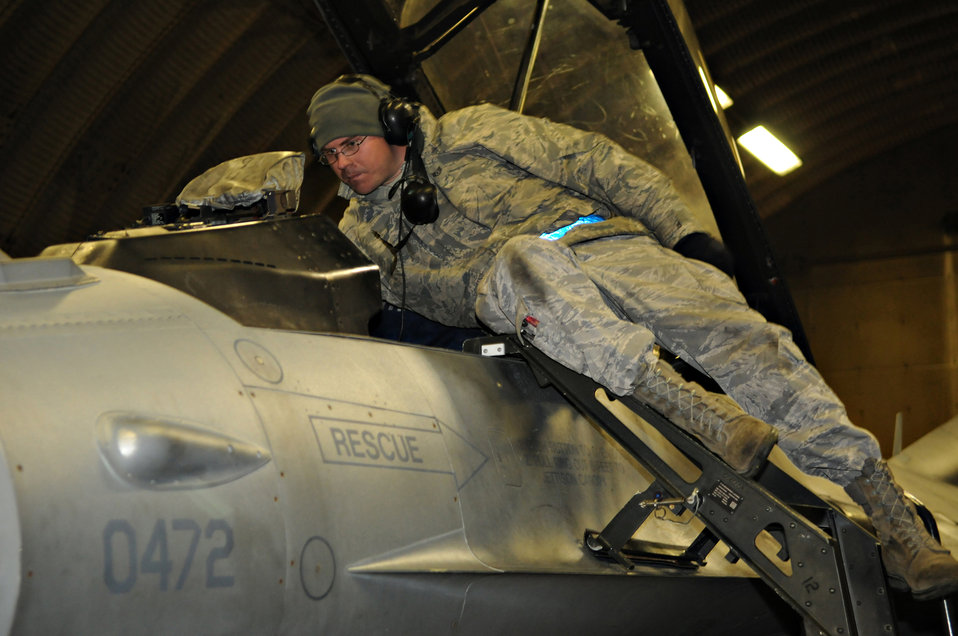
Operation Odyssey Dawn

SPANGDAHLEM AIR BASE, Germany ? A 52nd Aircraft Maintenance Squadron avionics craftsman rekeys the avionics systems of an F-16 Fighting Falcon here March 18 that will depart in support of Operation Odyssey Dawn. Joint Task Force Odyssey Dawn is the U.S. Africa Command task force established to provide operational and tactical command and control of U.S. military forces supporting the international response to the unrest in Libya and enforcement of United Nations Security Council Resolution (UNSCR) 1973. UNSCR 1973 authorizes all necessary measures to protect civilians in Libya under threat of attack by Qadhafi regime forces. JTF Odyssey Dawn is commanded by U.S. Navy Admiral Samuel J. Locklear, III.